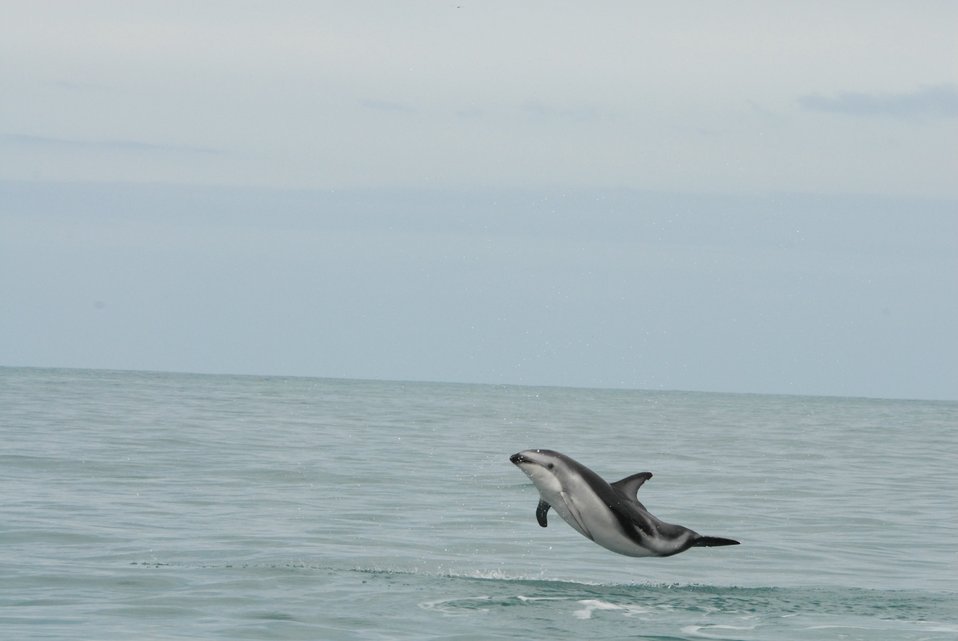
Dusky dolphin (Lagenorhynchus obscurus)